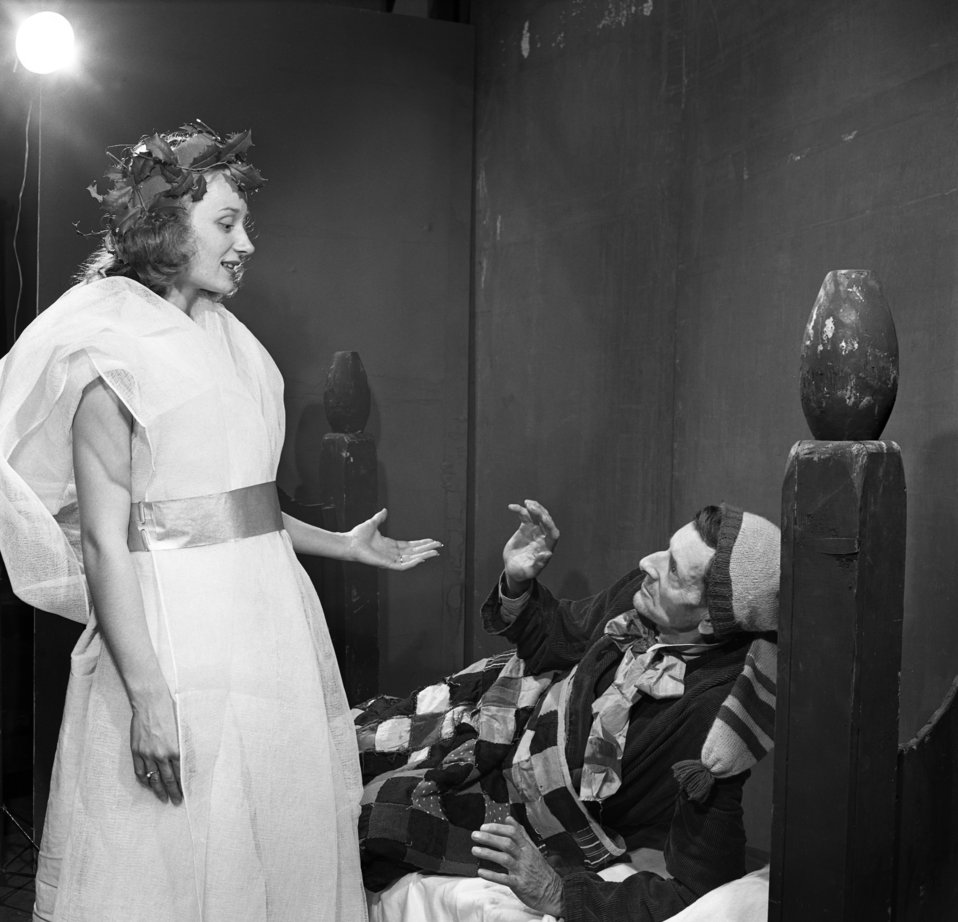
Community Playhouse 'Christmas Carol' Oak Ridge 1947

4067-b DOE photo Ed Westcott 12-5-1947 Oak Ridge Tennessee